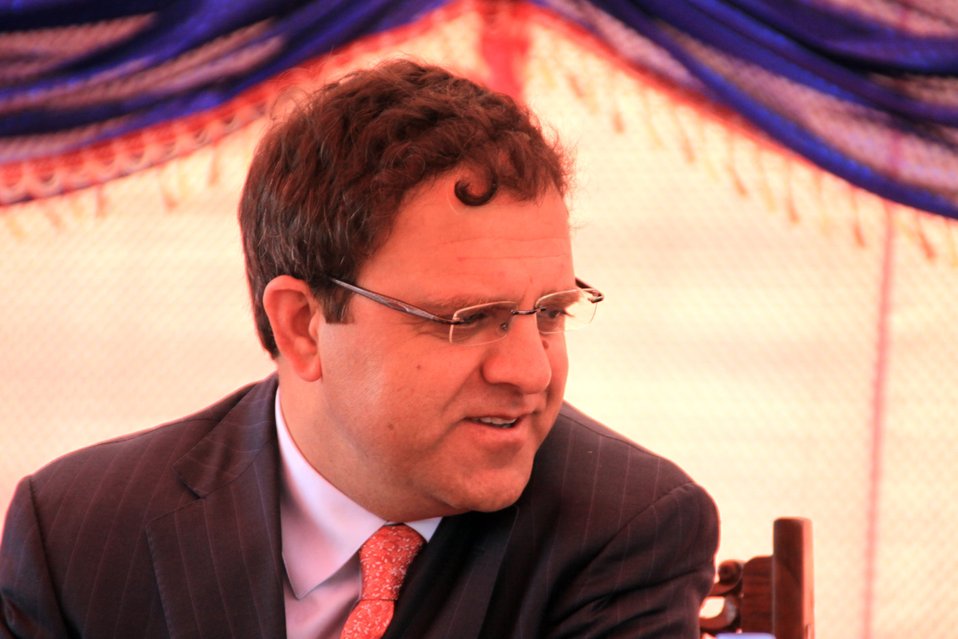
Badam Bagh Farm